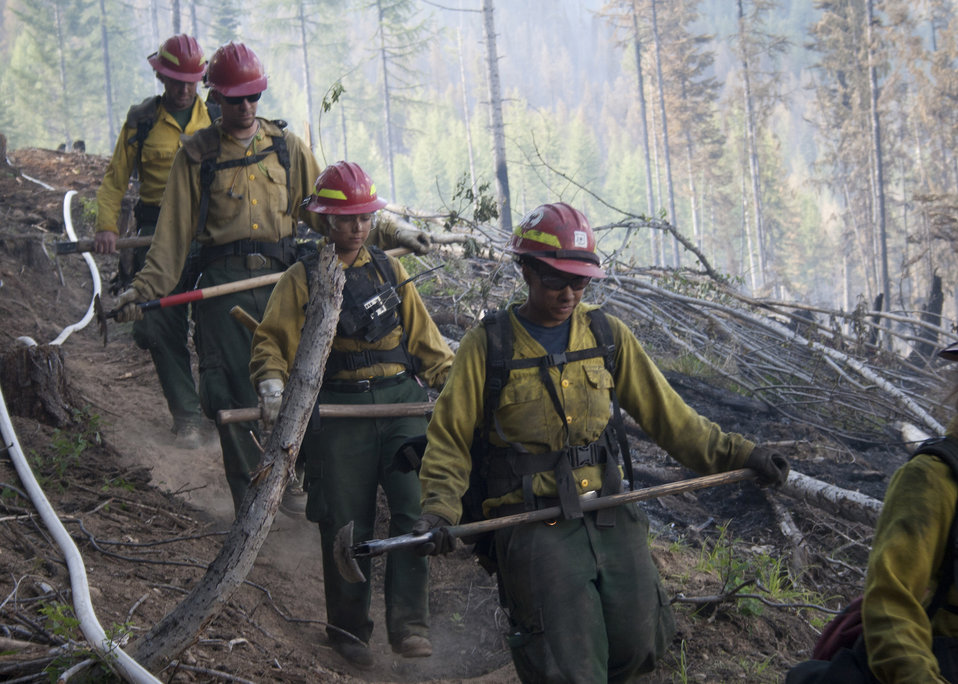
Firefighters supported by three fire engines, two helicopters, two water tenders, a dozer and an air tanker battled to contain the 90 acre Rogers Fire located on Mt. Rogers five miles west of Aladdin, WA on the Colville National Forest. Firefighters worked under adverse conditions with steep terrain and gusting winds to reduce the loss of timber and protect the Rogers Mountain Trail. The Rogers Fire began on Aug. 9, 2011 and was controlled by Aug. 19, 2011 with mop up crews ensuring that no flare-ups occurred. Colville National Forest has 1.1 million acres in northeastern Washington and includes the Kettle River, Selkirk Mountain ranges, and the upper reaches of the Columbia River.